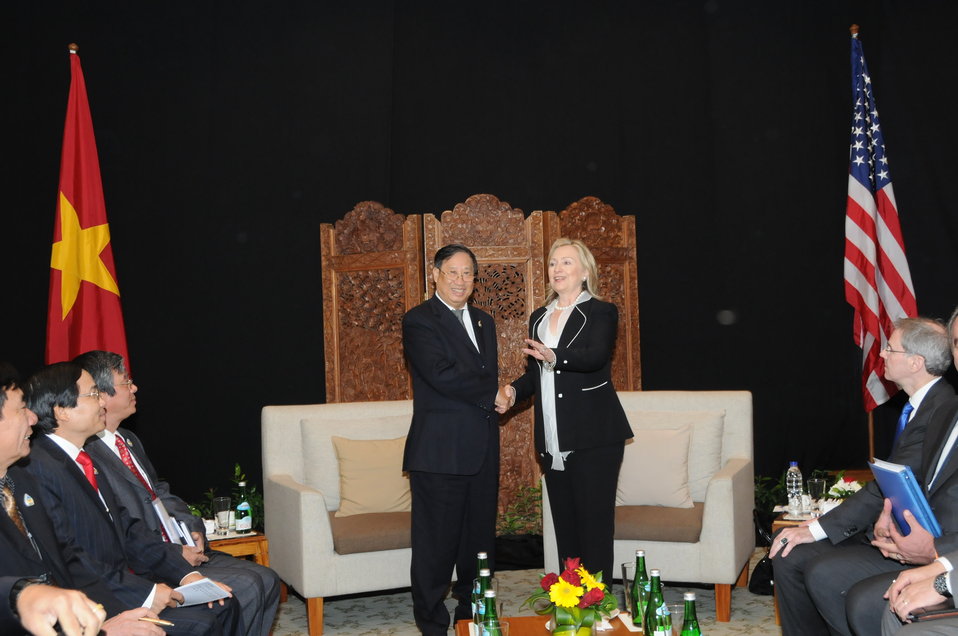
Secretary Clinton Shakes Hands With Vietnamese Foreign Minister Phạm Gia Khiêm

U.S. Secretary of State Hillary Clinton shakes hands with Vietnamese Foreign Minister Pháº¡m Gia Khiêm after their bilateral meeting in Bali, Indonesia, on July 22, 2011. Seated on the right are: U.S. Ambassador to ASEAN David Carden and U.S. Assistant Secretary of State for East Asian and Pacific Affairs Kurt Campbell.